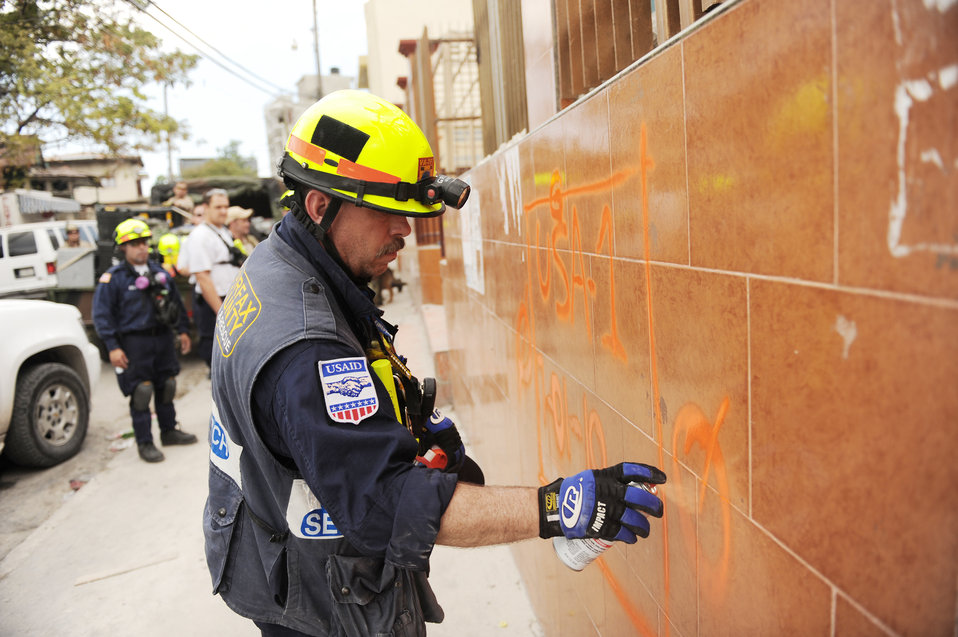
Haiti Earthquake Relief

A member of the Fairfax County Urban Search and Rescue Team, Va. marks a building after rescue operations turned up no survivors Jan 17, 2010, in Port-au-Prince, Haiti. Department of Defense assets have been dispatched to Haiti to assist with humanitarian assistance and disaster relief after a magnitude 7 earthquake hit the country Jan. 12, 2010.